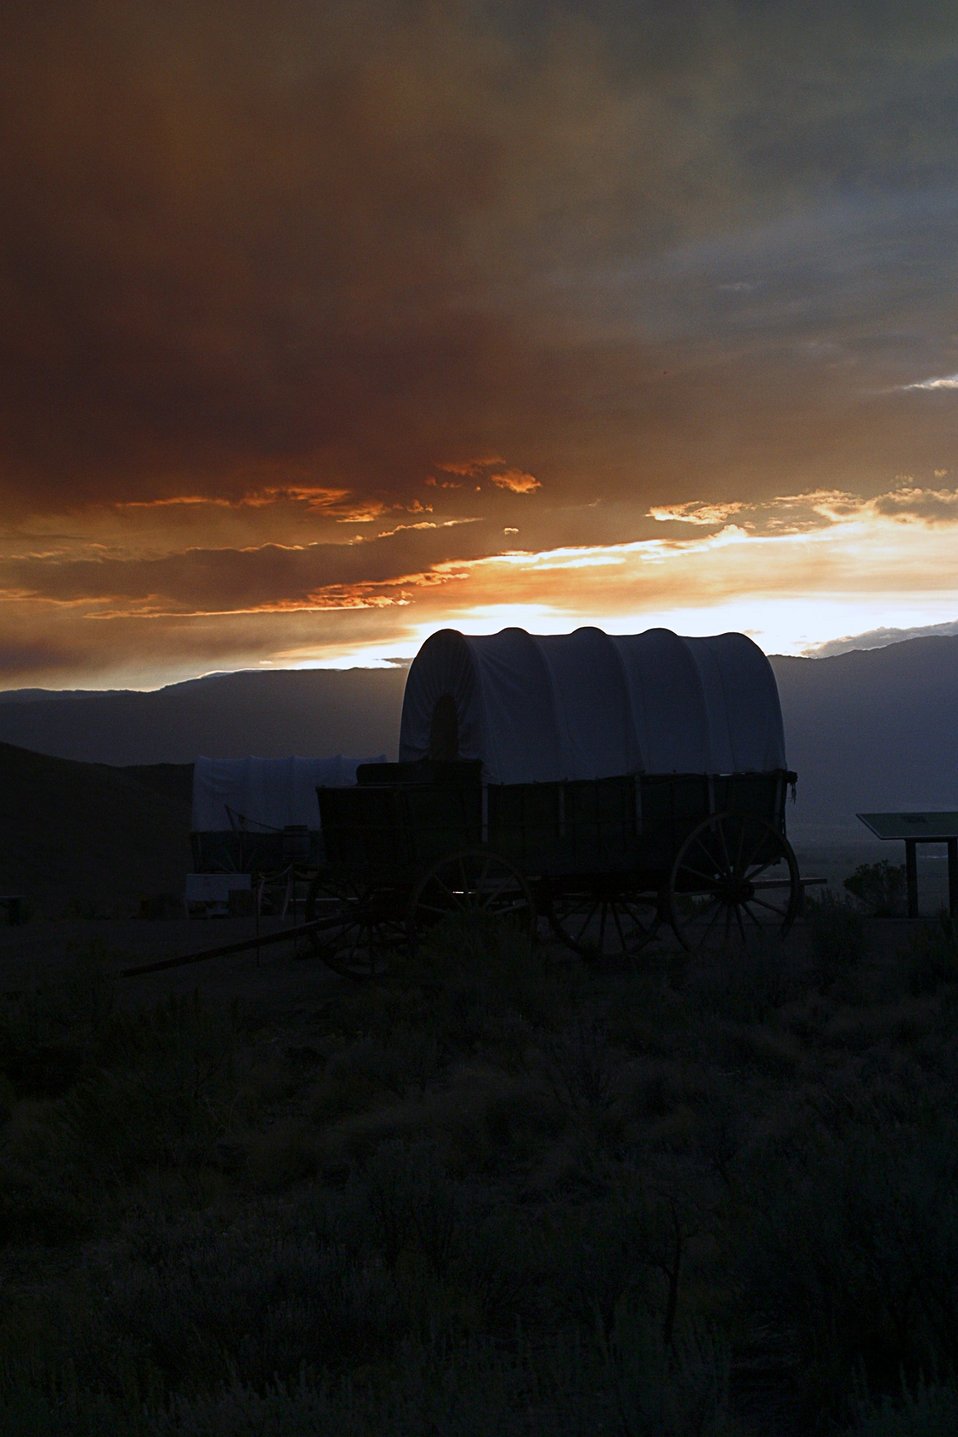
October sunset on wagon encampment at National Historic Oregon Trail Interpretive Center.